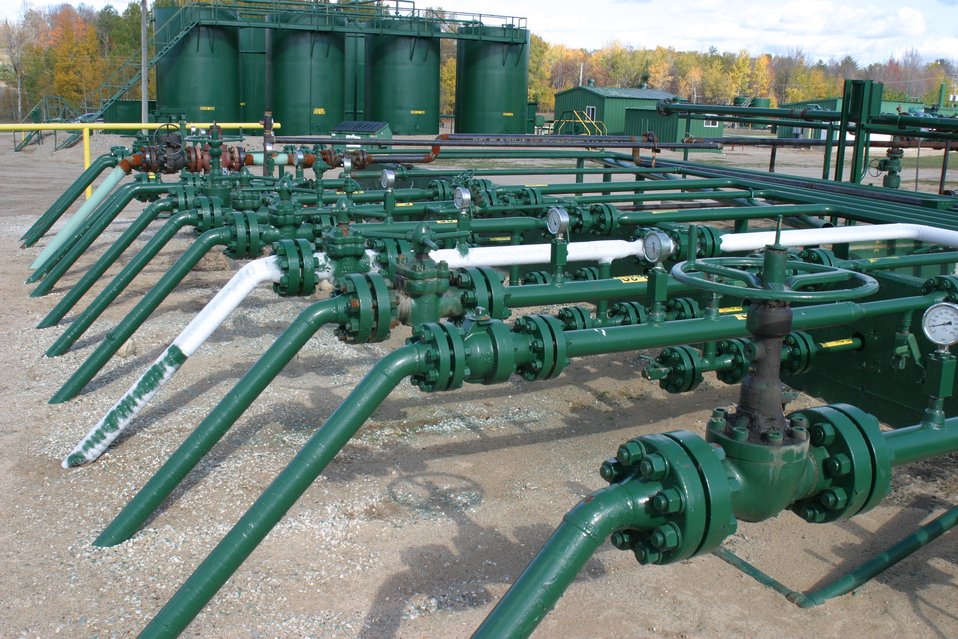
Enhanced oil recovery facility located in Gaylord, Michigan.